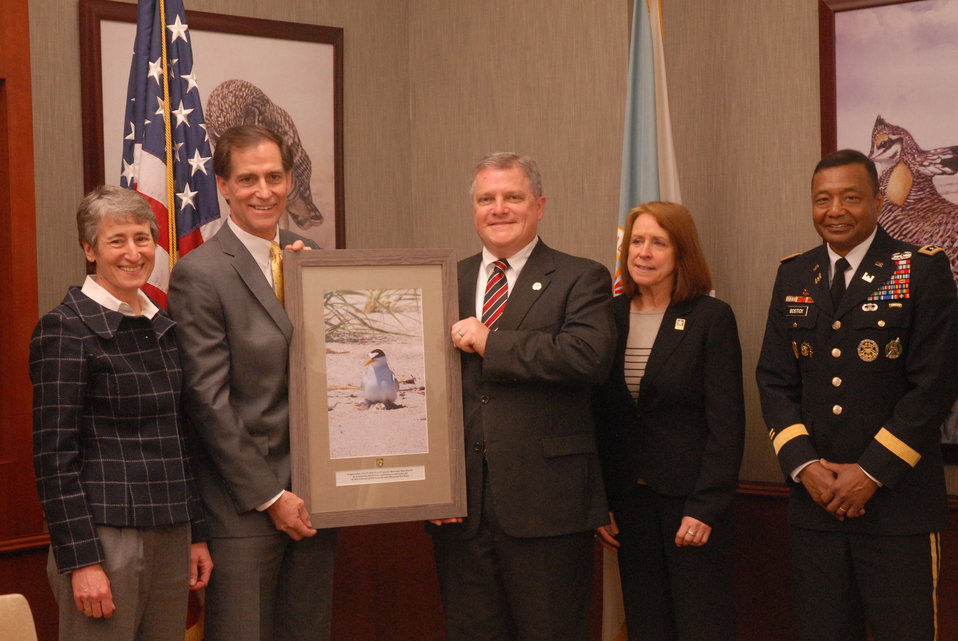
Hi Res -DOI-FWS-Corps3

Secretary of the Interior Sally Jewell, U.S. Fish and Wildlife Service director Dan Ashe recognize Eddie Belk, Director of Programs, Mississippi Valley Division U.S. Army Corps of Engineers, Assistant Secretary of the Army for Civil Works Jo-Ellen Darcy, and U.S. Army Corps of Engineers commanding general Lt. Gen. Thomas P. Bostick for an innovative landscape-level conservation approach. (Shown: Commemorative photo with plaque of Interior least tern with chick on nest) Photo by Tami Heileman, DOI (public domain photo) (High res)